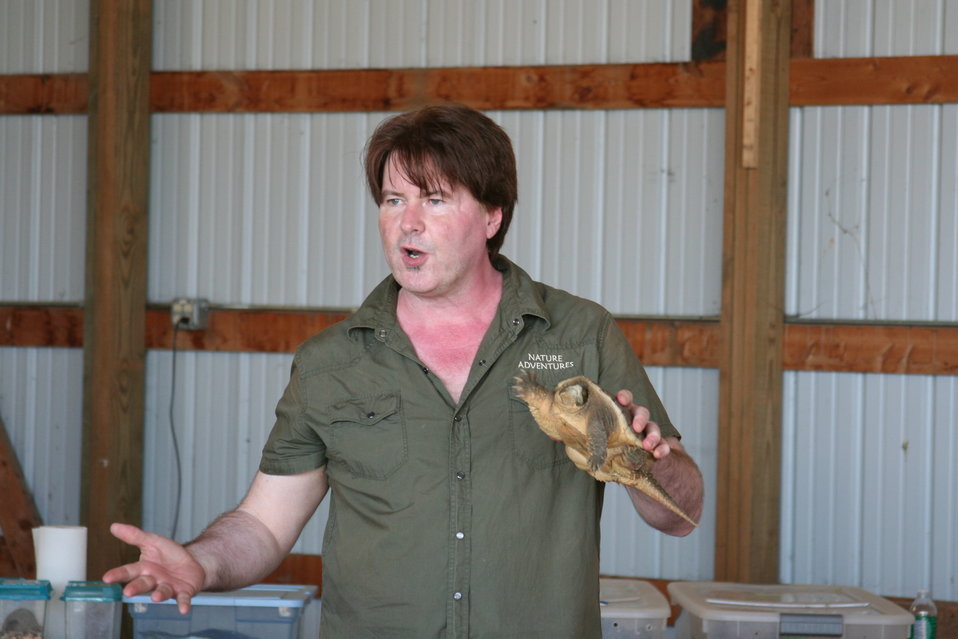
2011 Huron Prairie Fest